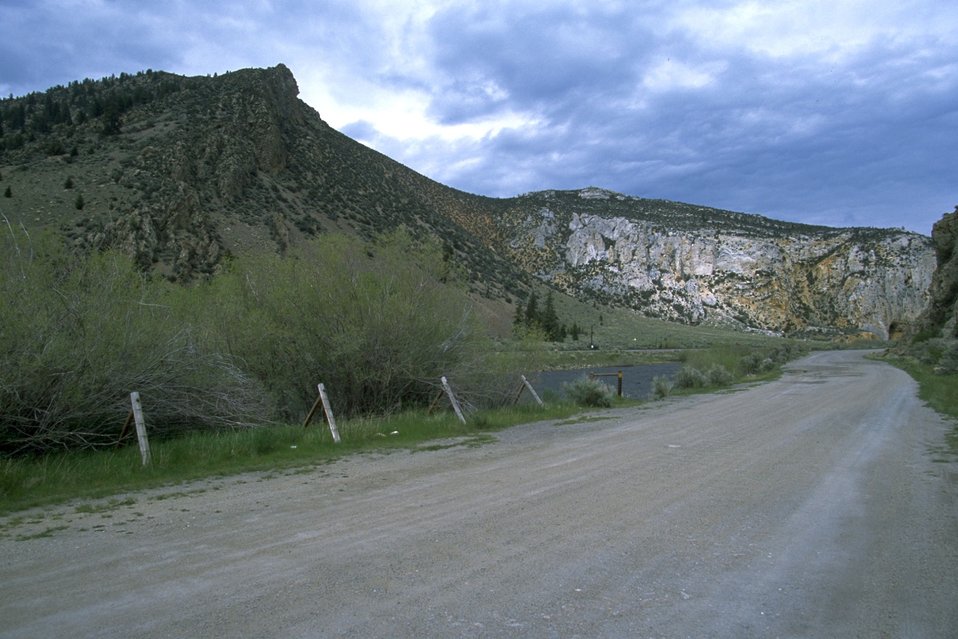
Road along the Big Hole River